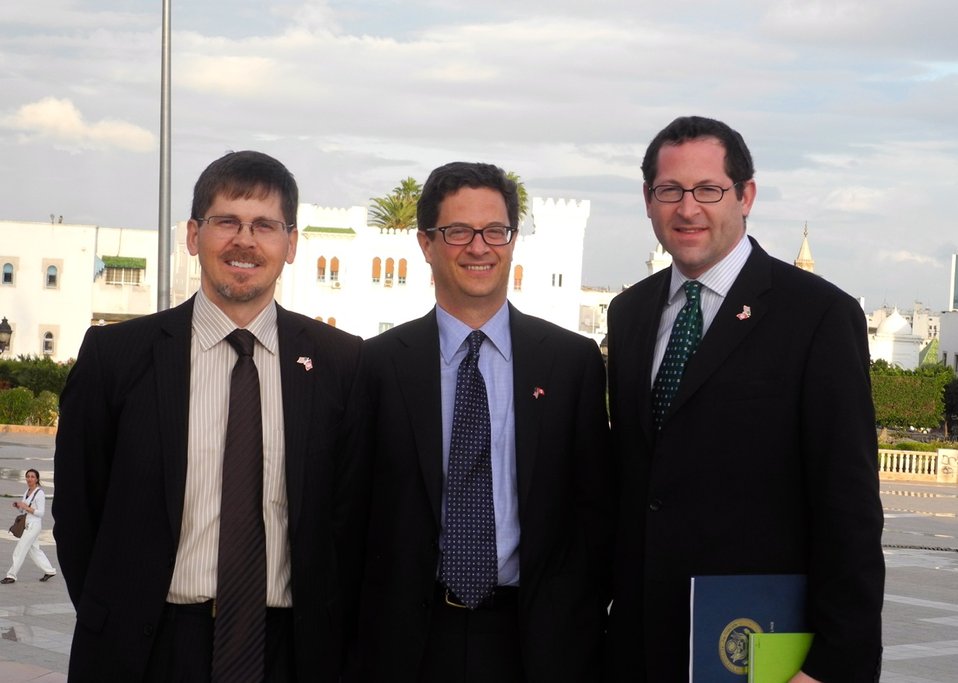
Assistant Secretary Collyns Meets with Tunisian Finance Ministry

Deputy Assistant Secretary Andy Baukol, Assistant Secretary Charles Collyns and Senior Advisor Michael Strauss in front of the Ministry of Finance in Tunis.